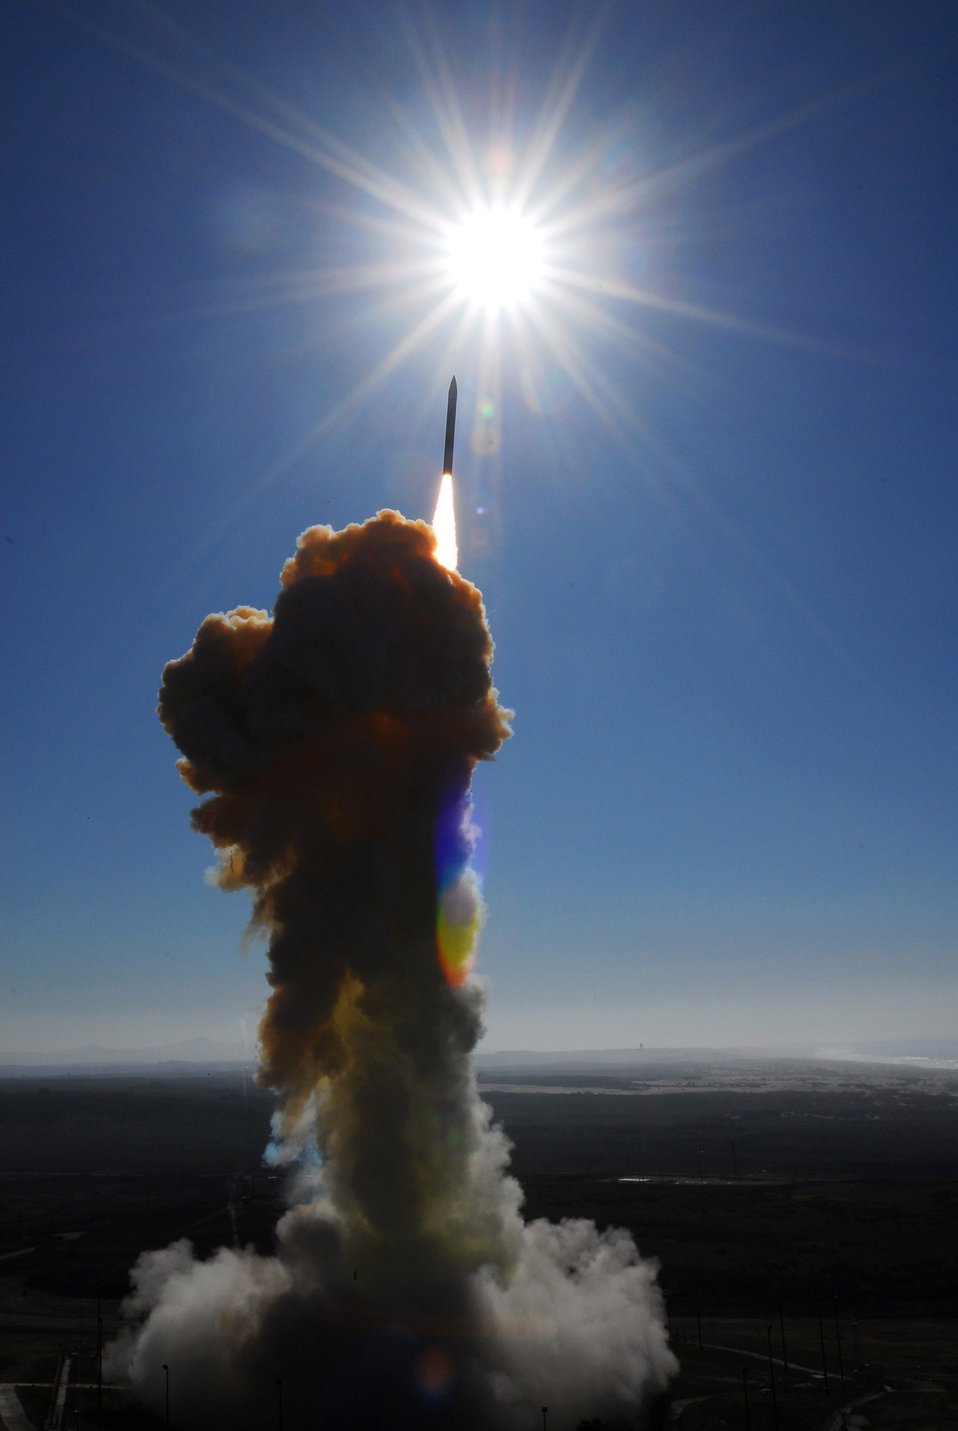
To infinity and beyond!

A ground-based interceptor missile lifts off Dec. 5 from Vandenberg Air Force Base, Calif., as part of a test of the Ballistic Missile Defense System. The missile successfully intercepted a long-range target launched from Kodiak, Alaska.